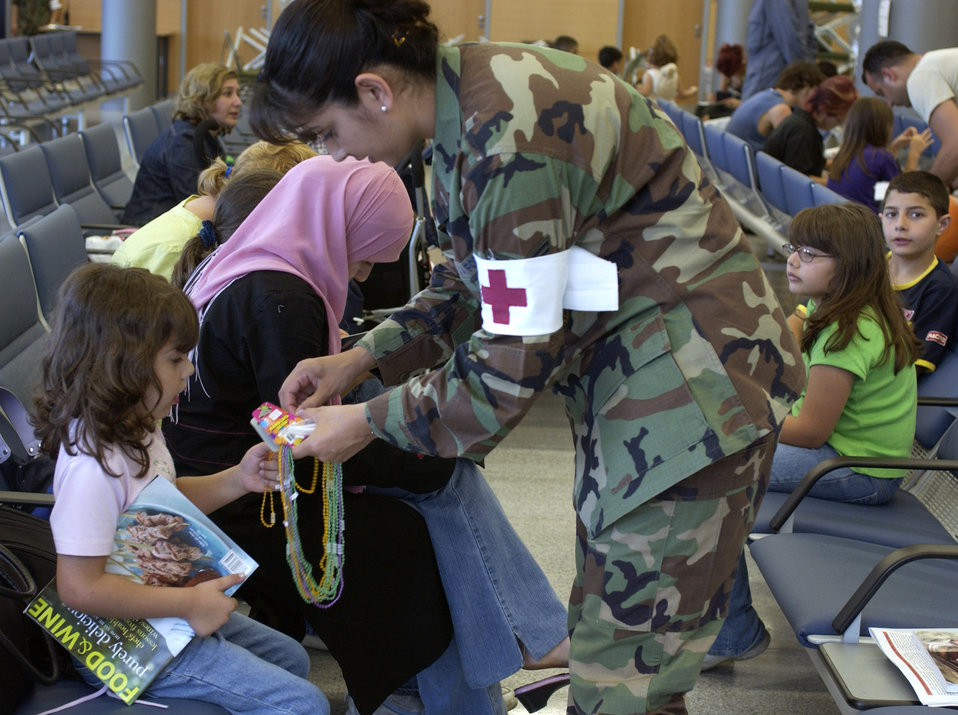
Heading to America

Tech. Sgt. Monica Snyder distributes candy and toys to children at the passenger terminal at Ramstein Air Base, Germany, on July 23. Airmen at Ramstein provided humanitarian assistance for American citizens departing the Lebanon crisis on their way to the United States. Sergeant Snyder is with the 435th Medical Group.